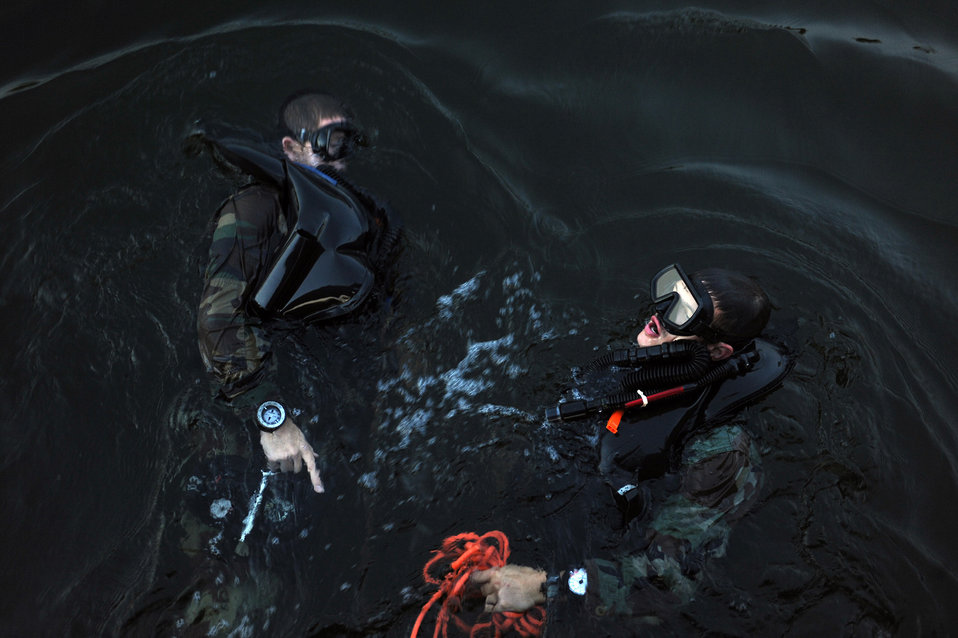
Tyndall Airmen prepare for morning dive

Airmen swim in pairs during an early morning dive during their combat dive course June 10, 2010, at Panama City Beach, Fla. The Airmen are combat controllers-in-training assigned to the 342nd Training Squadron Det. 2.